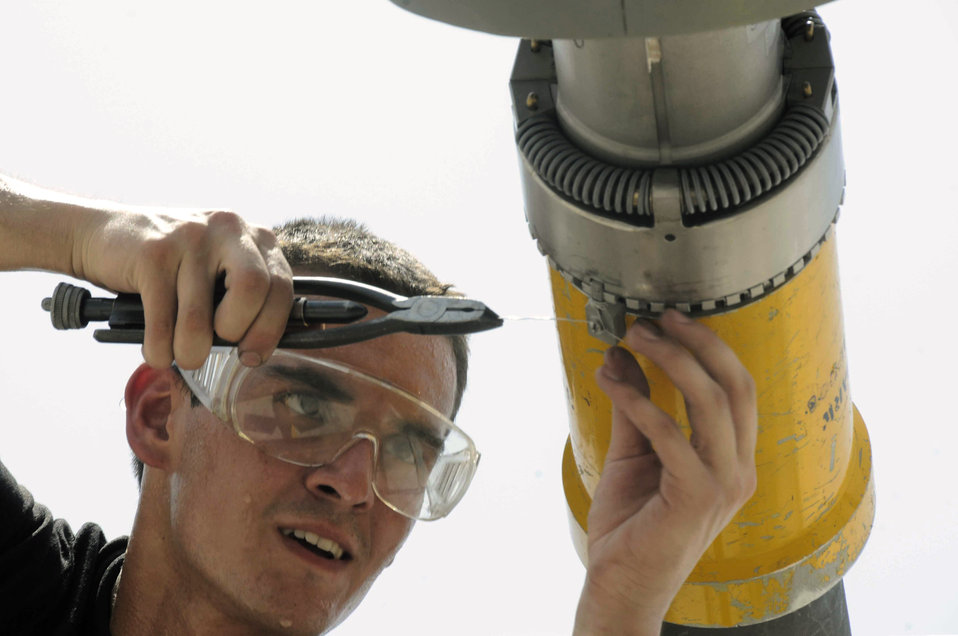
Airmen improve processes to increase efficiency

Airman 1st Class Jason Linehart applies safety wiring to a drogue adapter of a KC-135 Stratotanker boom July 24 at a Southwest Asian air base. The drogue adapter enables the KC-135 to refuel aircraft with different receiver systems. Airman Linehart is a 379th Expeditionary Aircraft Maintenance Squadron crew chief deployed from McConnell Air Force Base, Kan.